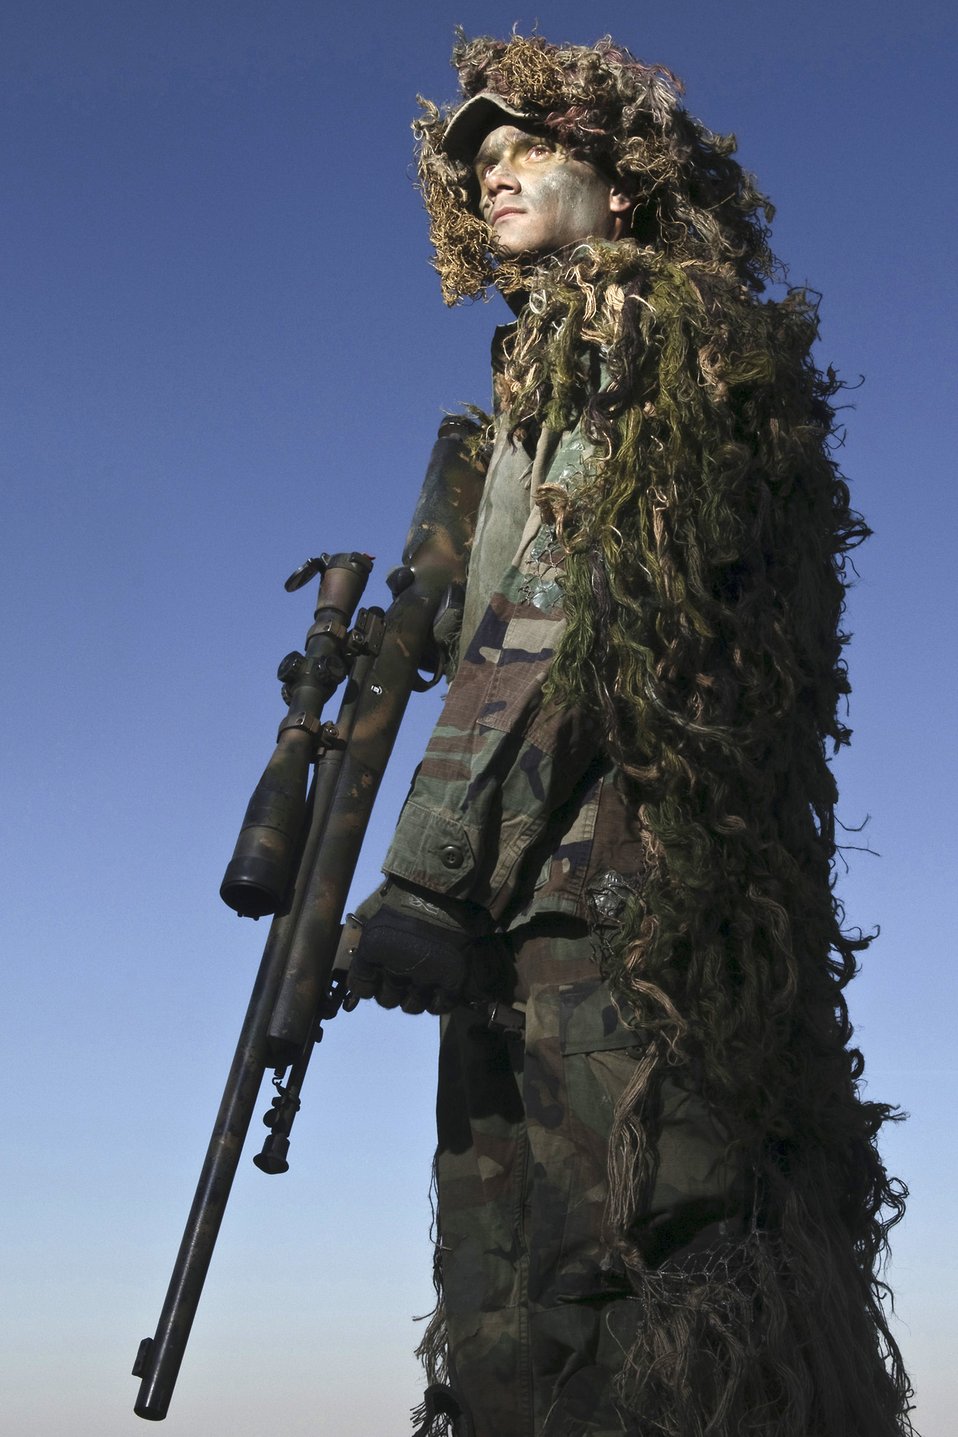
Now you see me, now you don't

Senior Airman Dominique Pondant is a graduate of the close-precision engagement course, where candidates learn topics such as evasion, survival and target range estimation. Airman Pondant is a sharpshooter with the 902nd Security Forces Squadron at Randolph Air Force Base, Texas.